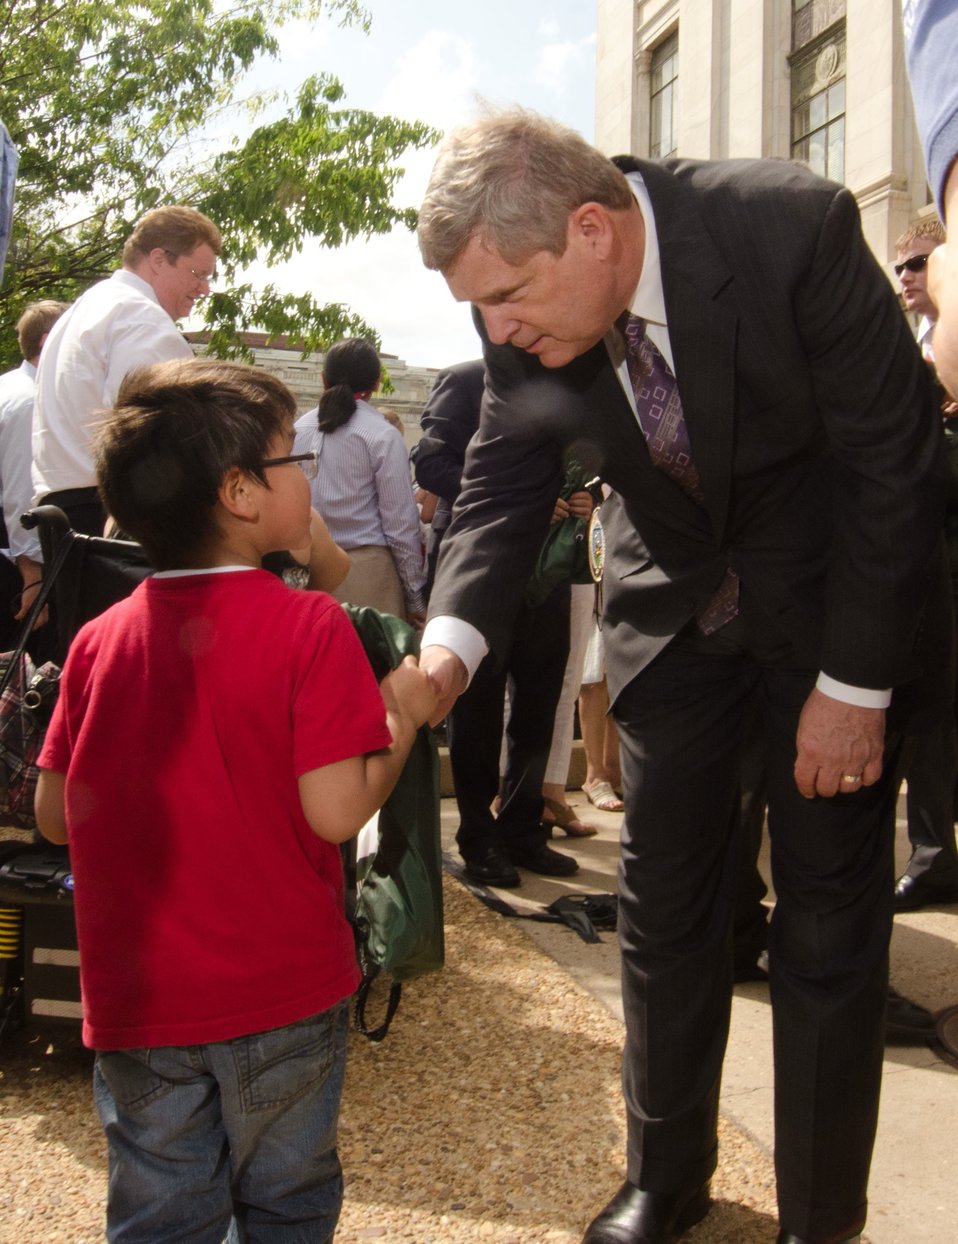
Agriculture Secretary Tom Vilsack (blue tie) and St. Louis Rams Quarterback Sam Bradford (light blue shirt) met at the Agriculture Department to encourage Native American Youth to pursue a healthy lifestyle on Wednesday, April 27, 20ll in Washington, DC. After opening remarks and questions, he spent time with the 30 Students from Eastern and Western Tribes, Southeast Alaska, and Tuba City, Arizona came to the Nation???s Capitol to plant vegetable seeds that are indigenous to North America. Bradford is a citizen of the Cherokee Nation. The garden is called The Roots of American Agriculture, and is part of the Headquarters??? People???s Garden.